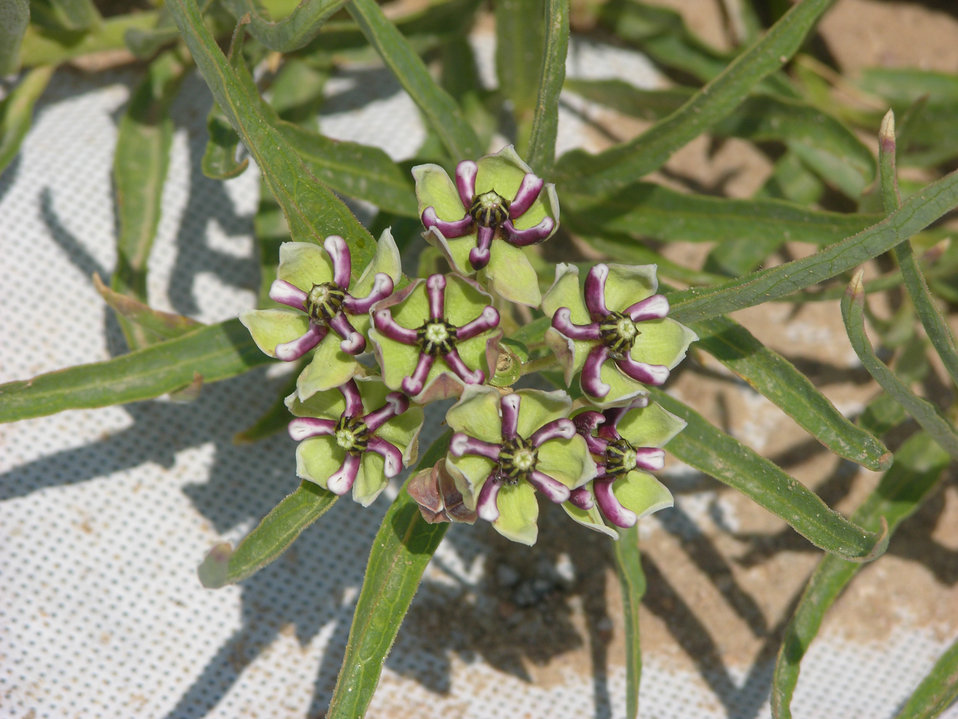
Flower

A spider milkweed flowering in early July at the U.S. Department of Agriculture (USDA) Natural Resource Conservation Service (NRCS) Plant Materials Center in Las Lunas, NM.